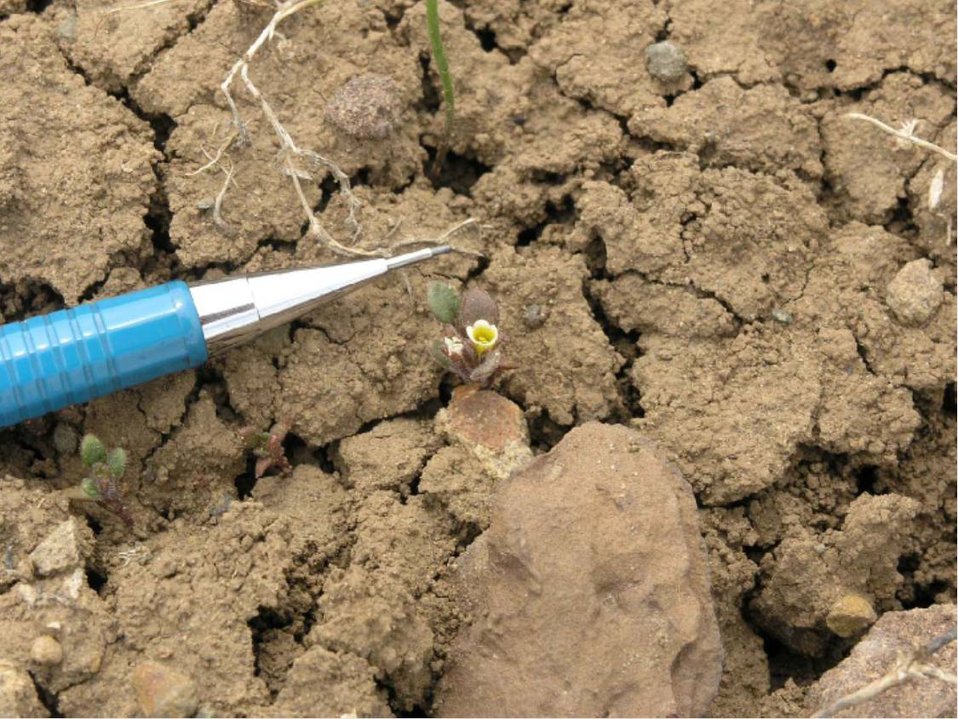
DeBeque Phacelia

Though DeBeque phacelia seldom grow larger than a silver dollar, this plant is particularly small.

Photo credit: USFWS

...........................................................................

BACKGROUND:

DeBeque phacelia (Phacelia submutica)

DeBeque phacelia is a very small, low-growing plant with cream colored flowers and dark-green to purplish leaves. This member of the waterleaf family (Hydrophyllaceae) is an annual, emerging in early April and completing its one-year life cycle by mid-June. The plant is only found in a twelve-mile radius around the town of DeBeque, in Mesa and Garfield Counties, Colorado and is restricted to colorful exposures of chocolate to gray shades of alkaline clay soils within the Wasatch geologic formation. On these island-like barren exposures, it grows in small patches with few individuals. Individuals are known from 9 separate populations and numbers dramatically fluctuate from year-to-year, depending on climatic conditions.

DeBeque phacelia was first discovered in 1911 by naturalist George E. Osterhout, but extensive survey efforts to map the range of the species were not made until the 1980’s. Because of DeBeque phacelia’s limited range, small population size, and numerous threats to the species, it was proposed for listing as threatened under the Endangered Species Act in 2010 with a final listing expected in 2011. Threats to the species today include: oil and gas development, off-road vehicle traffic, heavy livestock use, proposed water projects, and potential effects from climate change.

To help manage and conserve DeBeque phacelia, research is underway to study the effects of dispersed development from oil and gas, off road vehicles, and grazing on the species. Another research project underway looks at the species’ reproductive strategy and collects information about its seed bank. In addition, this research is working to develop a method to survey for DeBeque phacelia year-round, using the seeds in the soil. Together, these projects will help land managers find ways to balance development with species conservation.

Eighty-seven percent of DeBeque phacelia populations are on public lands managed by the Bureau of Land Management and the U.S. Forest Service. The remaining twelve percent are on private lands. The Endangered Species Act does not protect plants on private lands and therefore, all conservation actions on private land are voluntary. Funding is available to landowners wanting to conserve the species. Please contact Gina Glenne or Ellen Mayo at 970-243-2778 for further information on this species and ways that you can help with conservation and recovery.